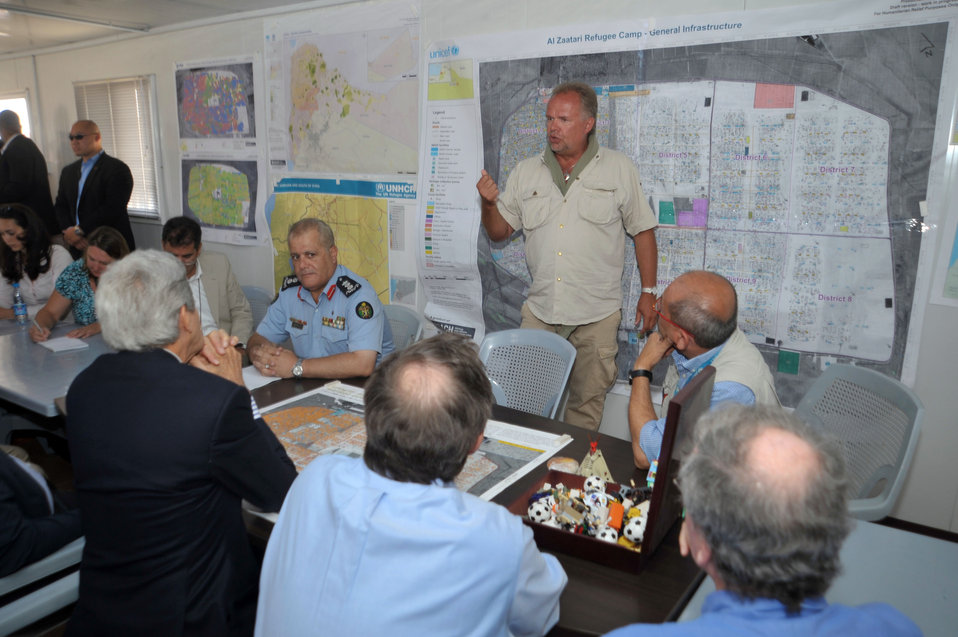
Camp Director Kleinschmidt Briefs Secretary Kerry

Camp Director Kilian Kleinschmidt of the Office of the United Nations High Commissioner for Refugees briefs U.S. Secretary of State John Kerry about the Za'atri camp for Syrian refugees during a visit on July 18, 2013.